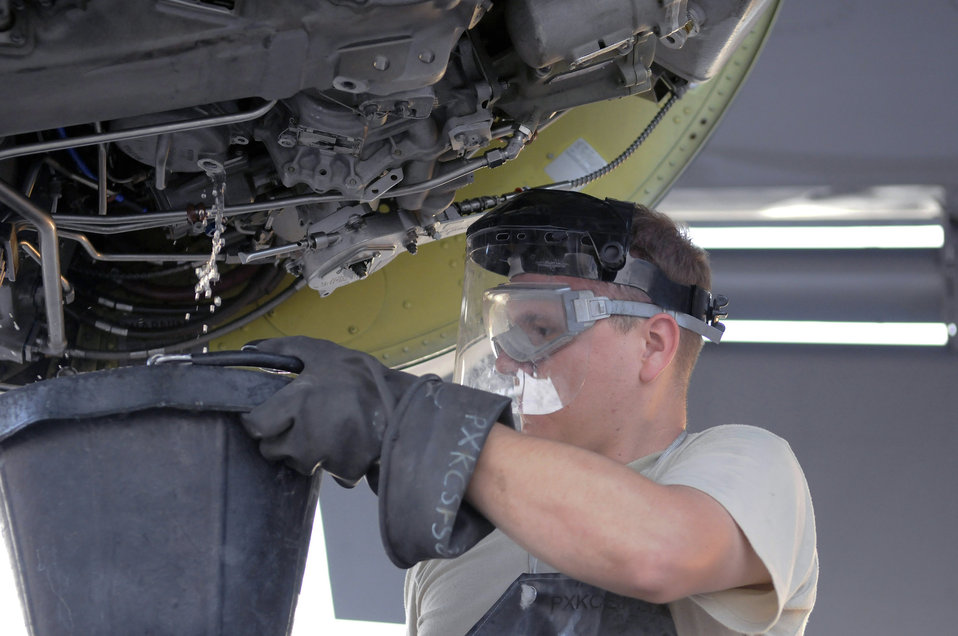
Engine tune up

Staff Sgt. Anthony Hernandez holds a bucket catching extra fuel after removing the fuel filter during a 120-hour inspection on a KC-135 Stratotanker engine Nov. 20 at an air base in Southwest Asia. KC-135s provide the core aerial refueling capability for the Air Force and support to Navy, Marine Corps and allied nation aircraft in the U.S. Central Command area of responsibility. Sergeant Hernandez is a native of Barstow, Calif., and is deployed from McConnell Air Force Base, Kan. He is assigned to the 379th Expeditionary Aircraft Maintenance Squadron.